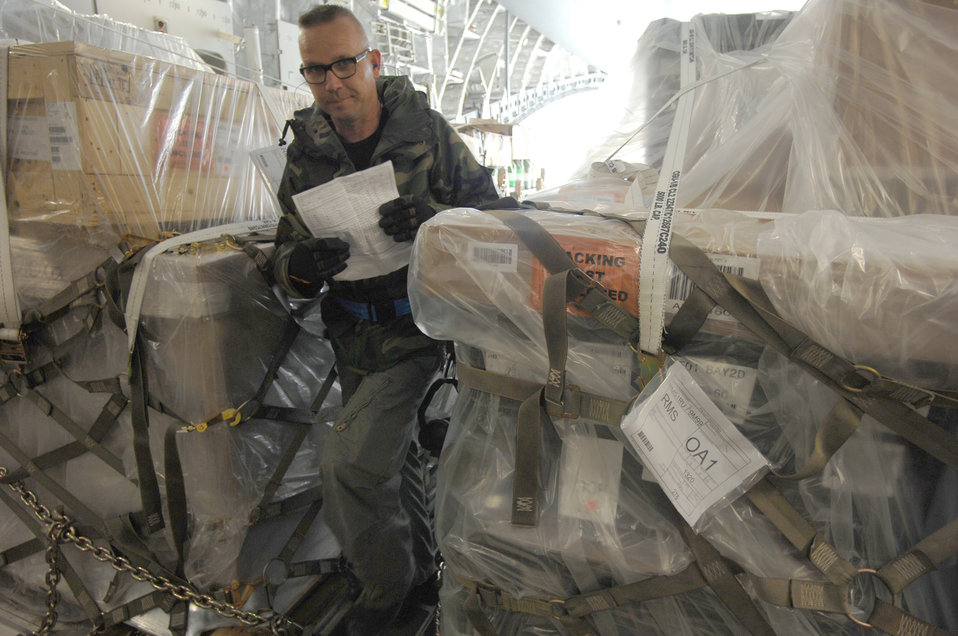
Ramstein member becomes first AF civilian to reach 500 APEX milestone

Kasper Chevalier checks over cargo loaded into a C-17, Globemaster III June 23, 2010 at Ramstein Air Base, Germany. Recently, Mr. Chevalier became the first Air Force civilian to reach 500 aeriel port expeditor course missions. The APEX program allows select air transportation personnel to obtain qualifications similar to aircraft loadmasters, enabling a shorter on the ground time for loadcrews. Mr. Chevalier is an aerial porter in the 721st Aerial Port Squadron.